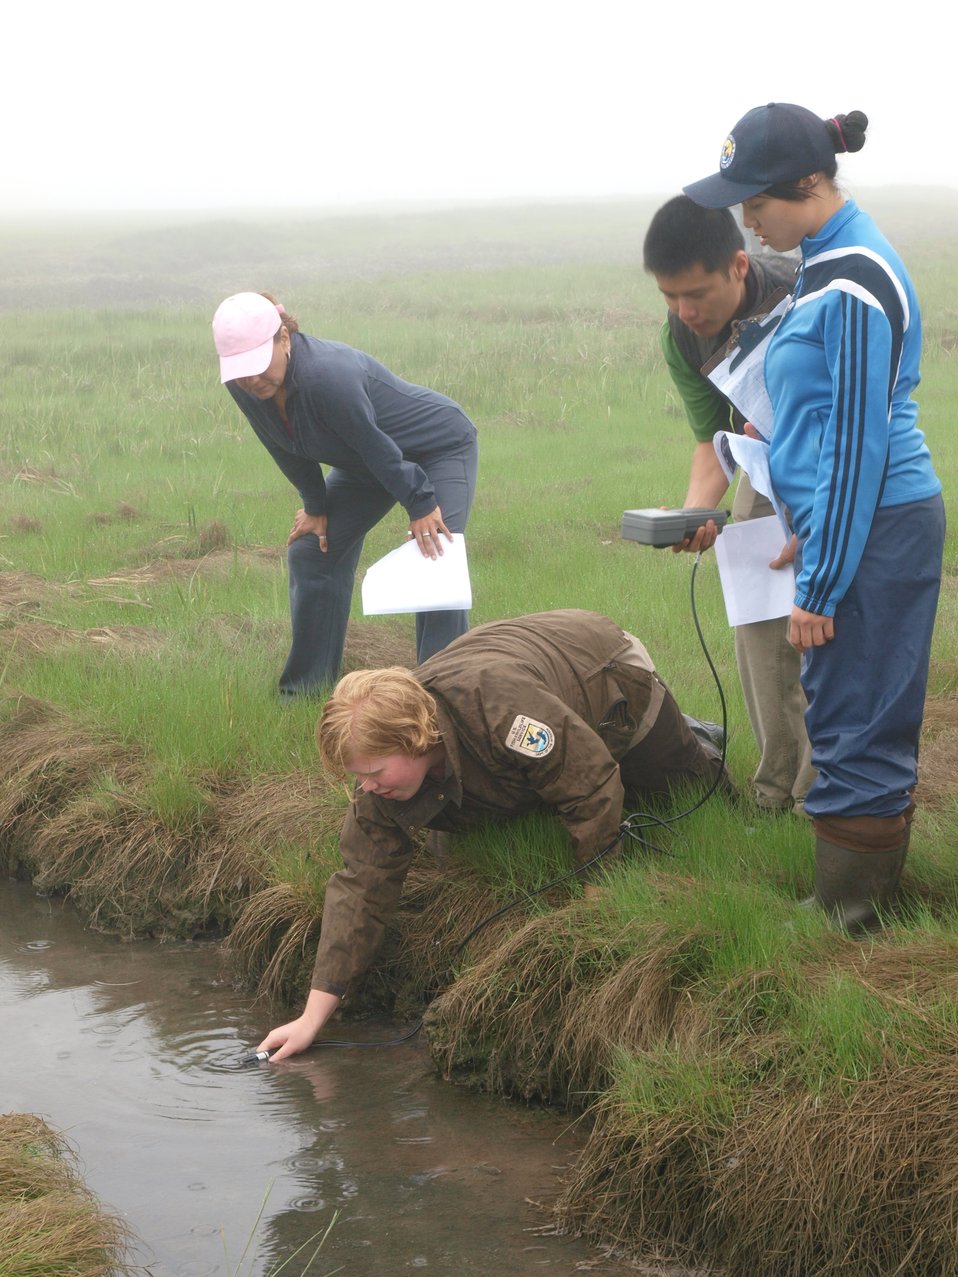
Learning how to measure salinity in a salt marsh

With guidance from Service employees, CIP Students measure the salinity of water in a salt marsh.